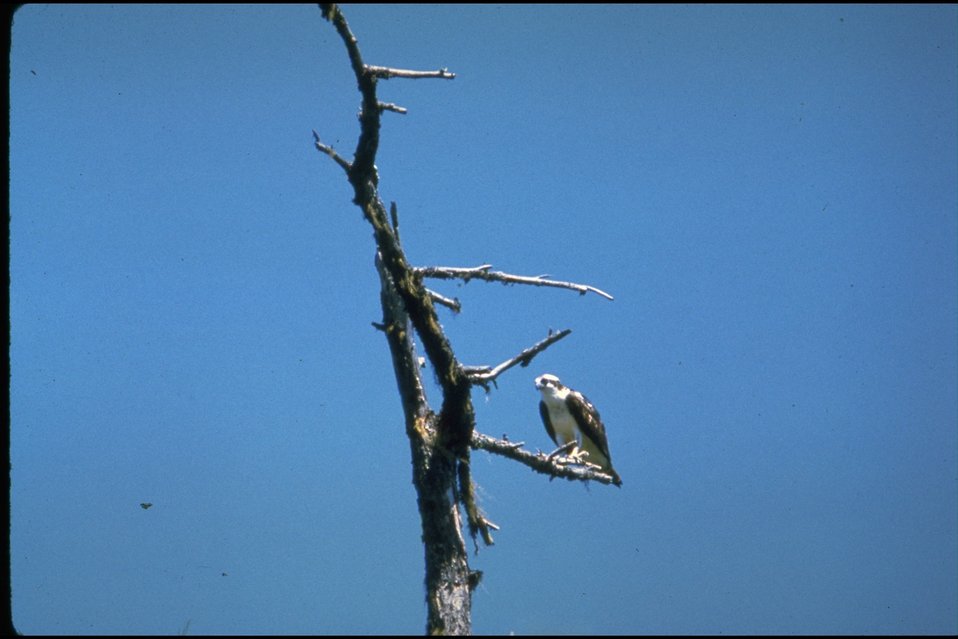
Rogue River - Osprey.